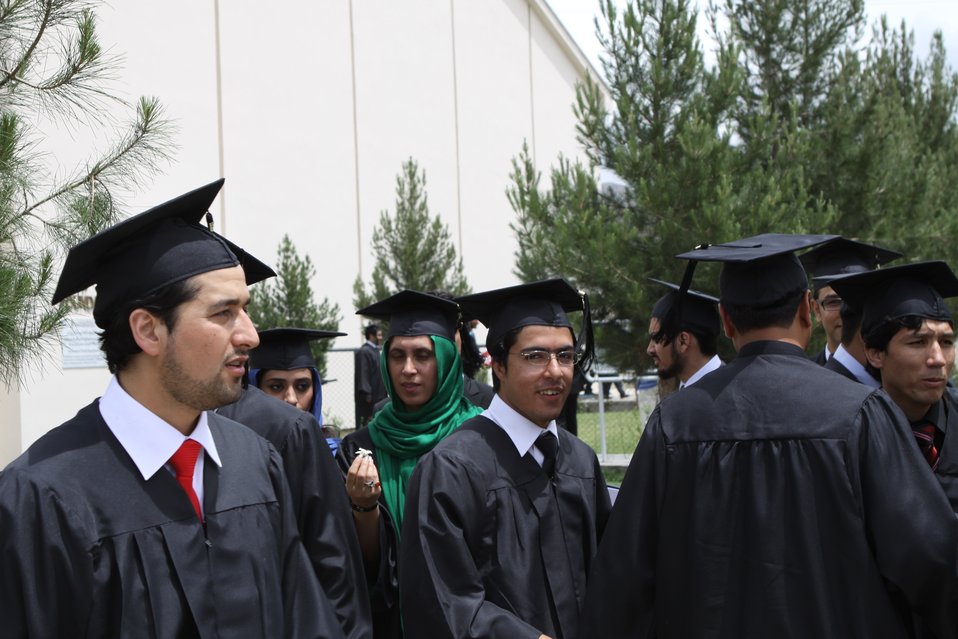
100526 AUAF Graduation 339